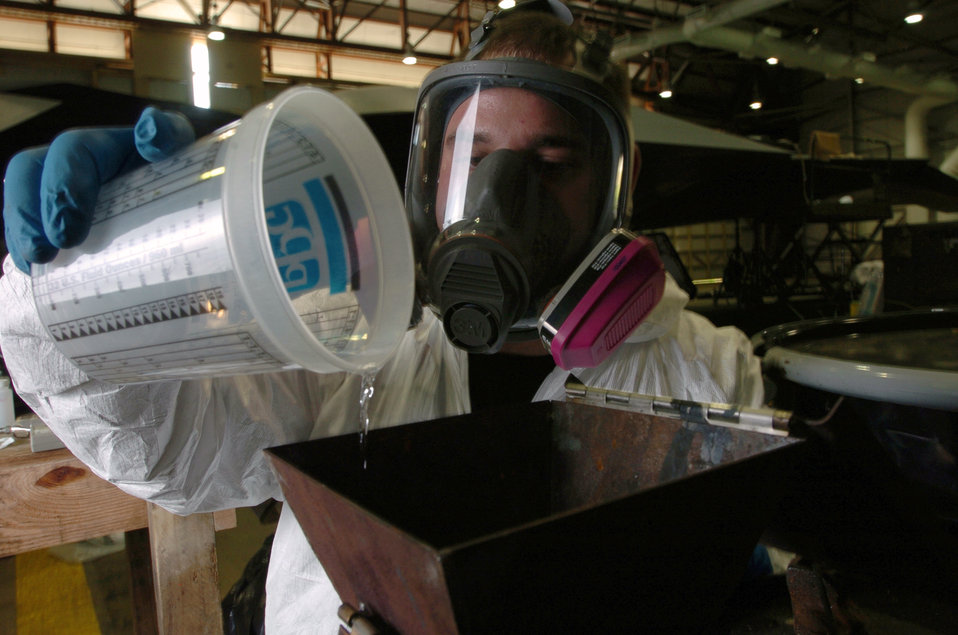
Missouri Airmen welcome challenge to keep B-2 safe

ANDERSEN AIR FORCE BASE, Guam -- Staff Sgt. Jody Arbogast dumps chemicals inside a disposal unit while repairing the surface of a B-2 Spirit bomber deployed here. The Spirit's skin has to be kept in pristine condition to help maintain its stealth qualities. He wears gear to protect him from fumes caused by chemicals. Sergeant Arbogast is a low observable technician from the 509th Maintenance Squadron at Whiteman Air Force Base, Mo.